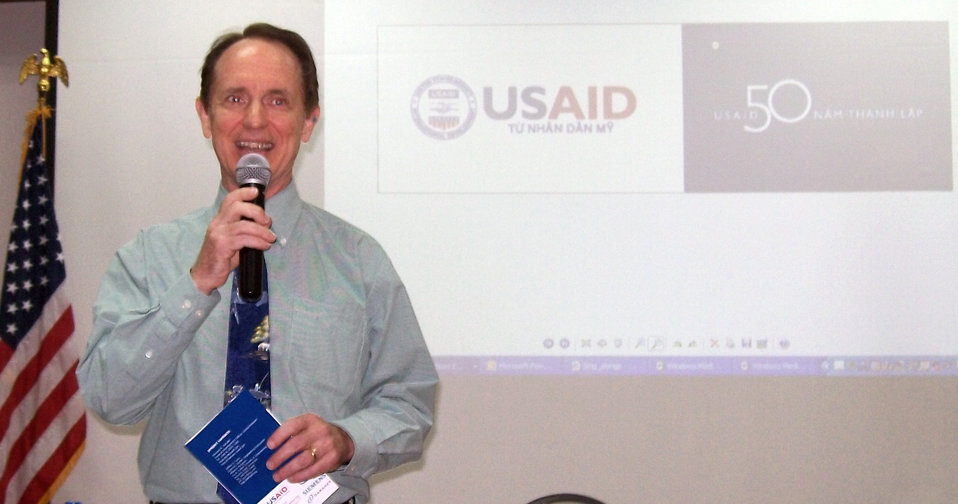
American Center and USAID host Debate Club on Higher Education

USAID/Vietnam Mission Director Francis Donovan address students and discusses the USAID-supported Higher Engineering Education Alliance Program with Arizona State University, Intel, and others.